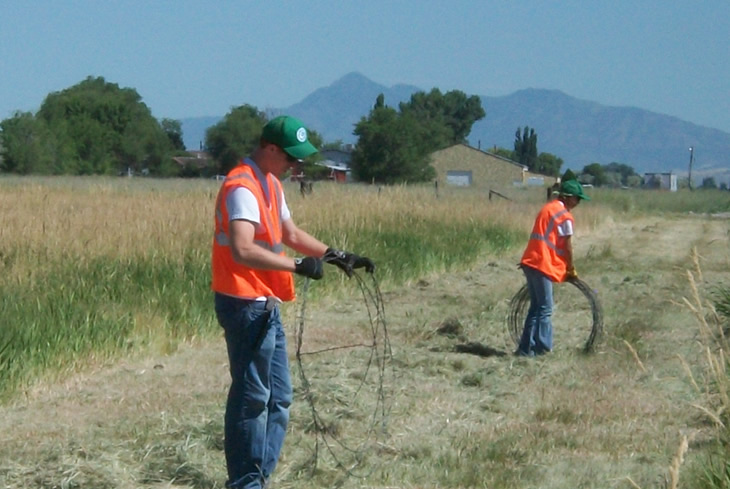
Barbed Wire Removal

Youth Conservation Corps crew removed a split rail fence around a public parking area and approximately 1,000 feet of barbed wire fence.